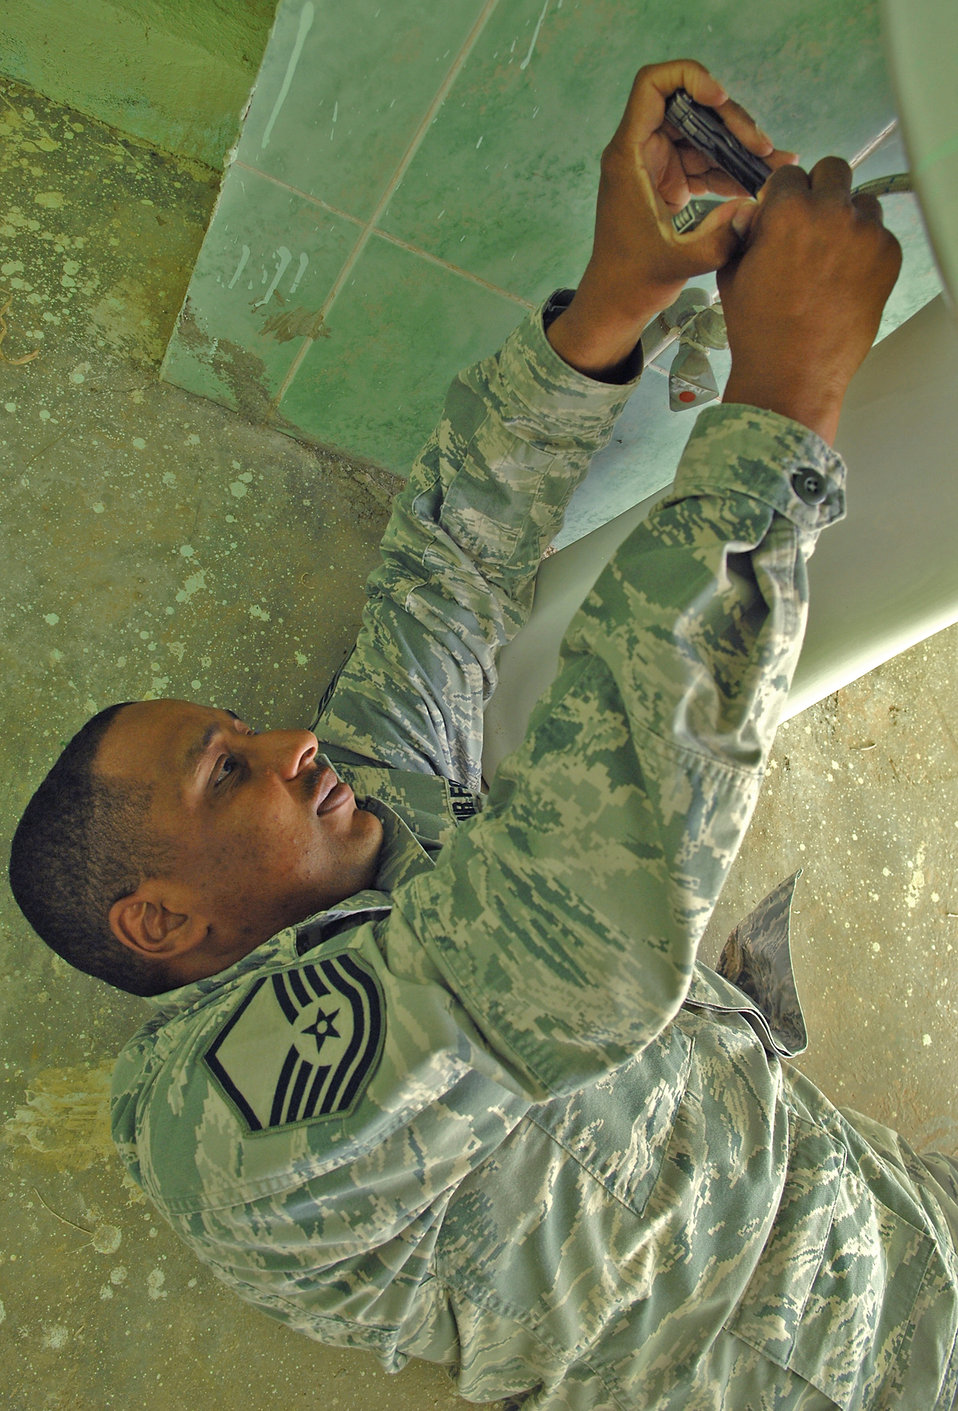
Coalition team restores Iraqi shrine

In a building adjacent to the Sultan Saqi Shrine here, Master Sgt. Todd McGee, 506th Expeditionary Civil Engineer Squadron plumber, tightens a section of a pipe under a bathroom sink. Sergeant McGee upgraded the building's water system, and repaired commodes and sinks in this building as a part of partnership with Iraqi airmen to restore two structures located in the Sultan Saqi cemetery.